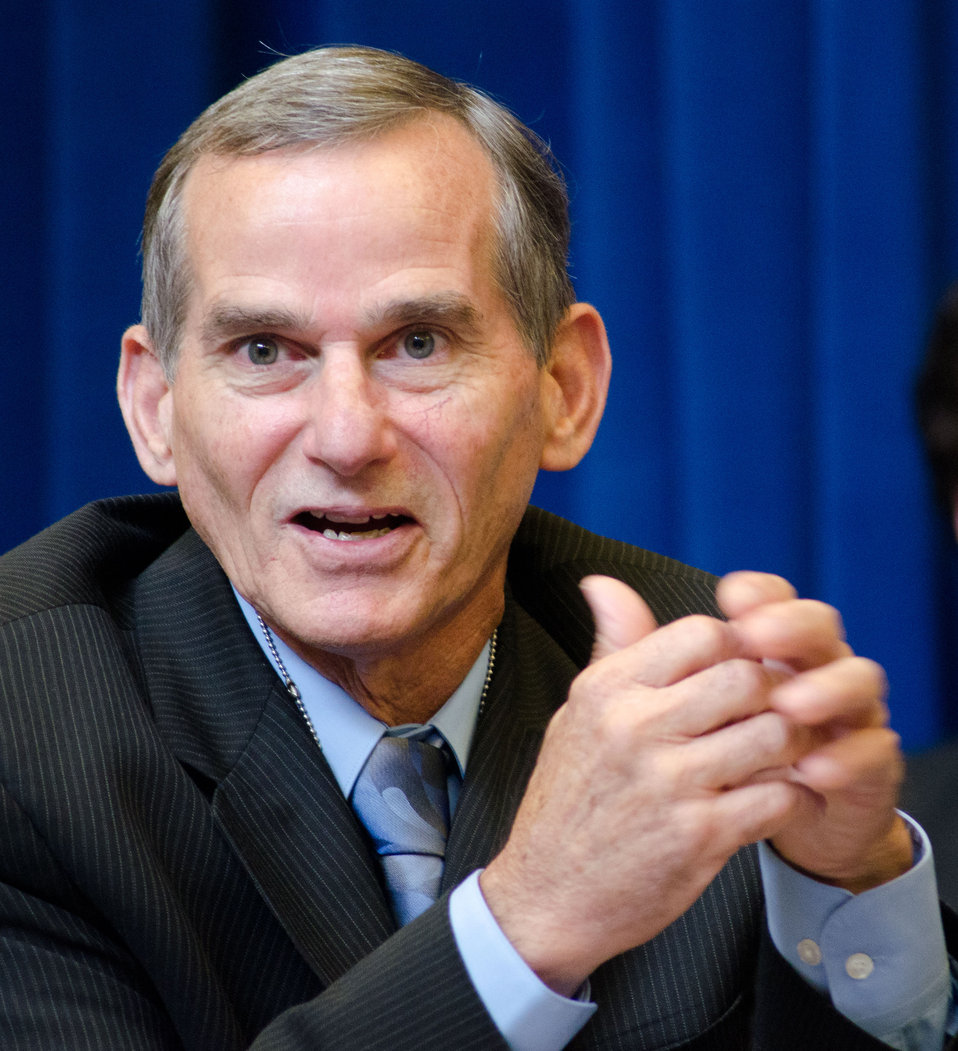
Eric Rund, Green Flame Energy, IL, attended a meeting at the White House, in Washington, DC, on July 6, 2011. He was asked to participate along with President Barack Obama, Agriculture Secretary Tom Vilsack, the President's Domestic Policy Adviser Melody Barnes and rural communities leaders from across the country for the White House Rural Champions of Change event to strengthen rural communities and promote economic growth. When the gasoline additive MTBE was banned in 2006 and ethanol was its only practical replacement, Eric as a corn farmer, became very interested in joining with other farmers to build a corn ethanol plant. Their project never came to fruition but the effort made him look more closely at how farmers might participate in producing energy. He discovered other crops that could produce more energy more efficiently than corn, and do it on poorer soils. From research at the University of Illinois, Eric selected the most promising biomass crops to try on his farm. He also traveled to Europe to learn from farmers there who had been growing these same energy crops for many years. What he learned gave him the confidence to form Green Flame Energy and offer seed stock, equipment and services to other farmers wishing to grow and utilize biomass energy. This spring he is working with over fifty producers and four end users to sponsor a USDA-BCAP project area. He has shown that with a little seed money provided by programs like this, biomass crops can sustainably provide a good portion of our nation’s energy while benefitting the environment and creating much needed rural jobs.